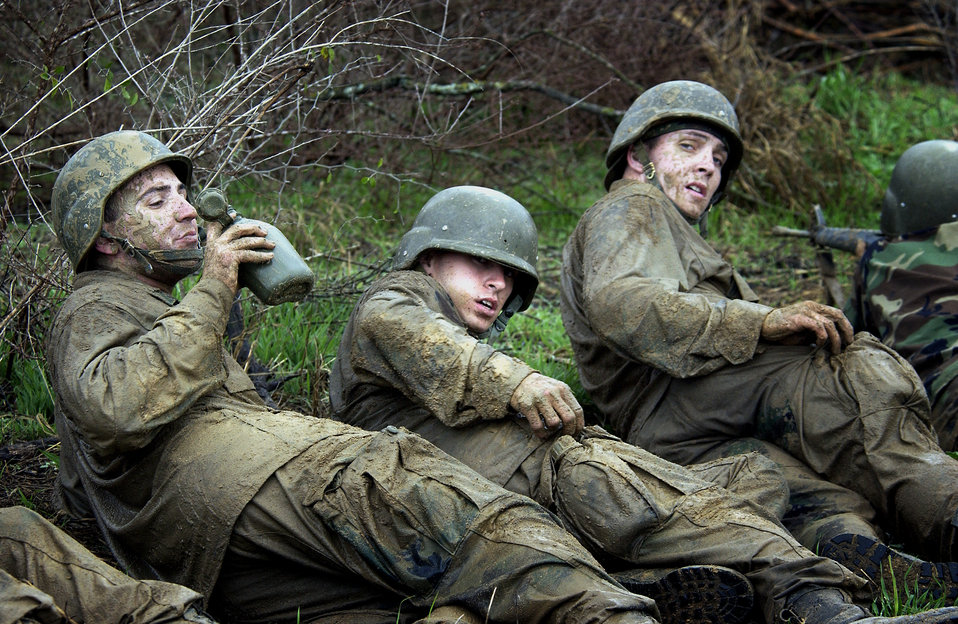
Hell's Half Mile - mission complete

LACKLAND AIR FORCE BASE, Texas -- Basic trainees Stephen Weaver (left), Christopher Mann (middle) and Ryan Locke rest after completing